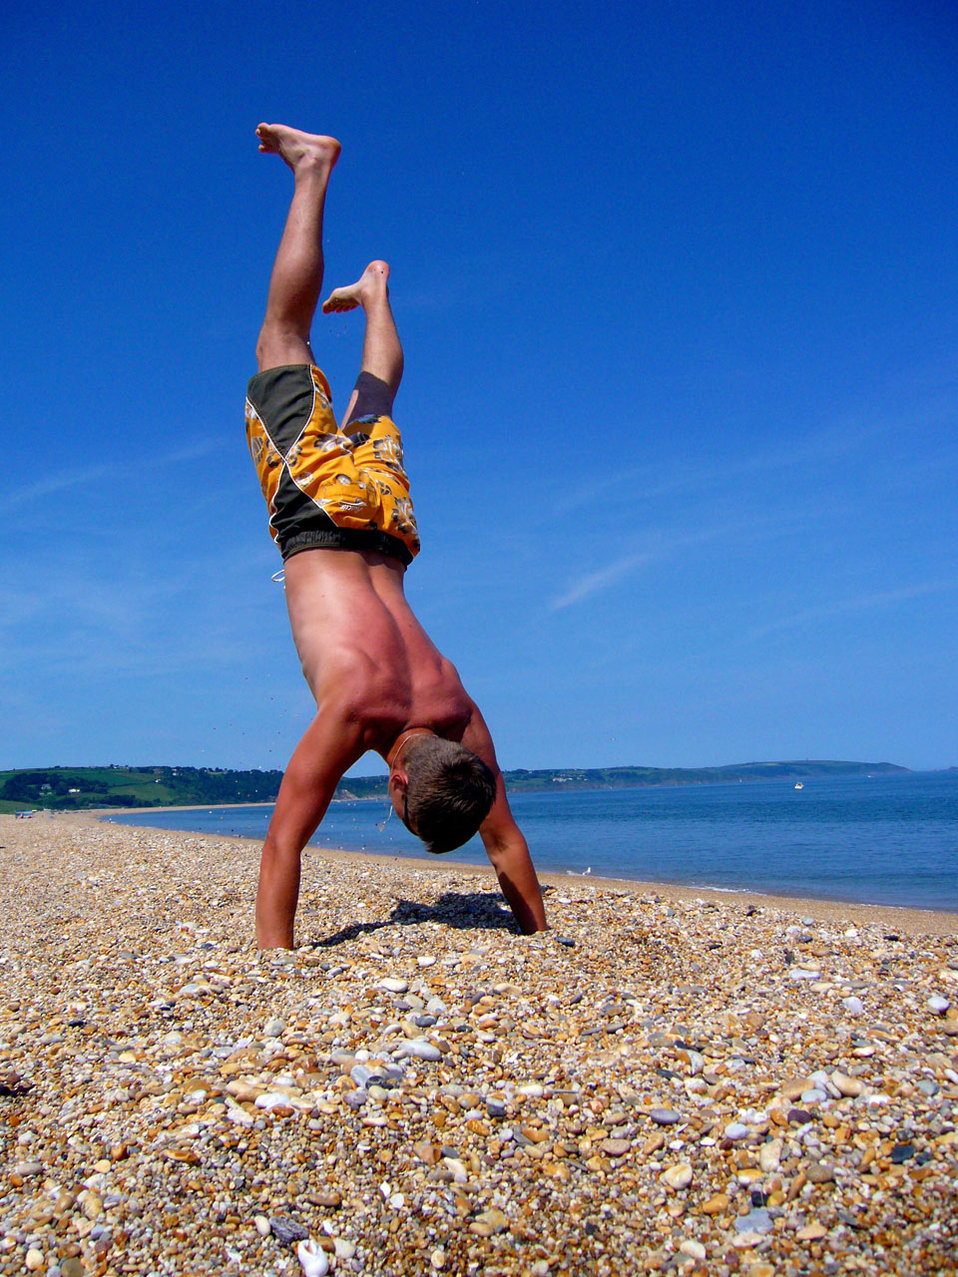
Boy on the beach.